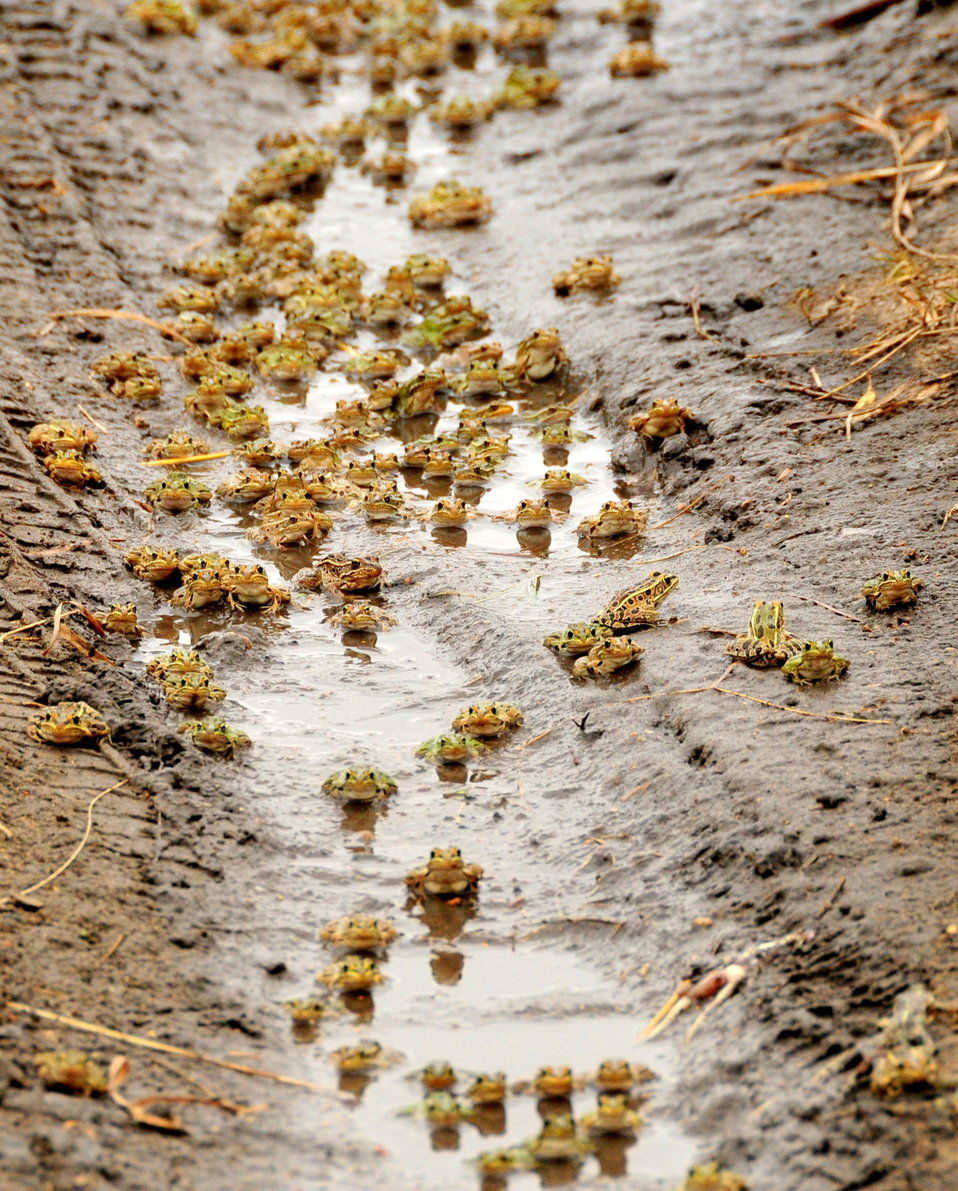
Northern leopard frog gathering Sand Lake WMD 02

Northern leopard frogs concentrate in the fall at an overwintering site on Sand Lake WMD.